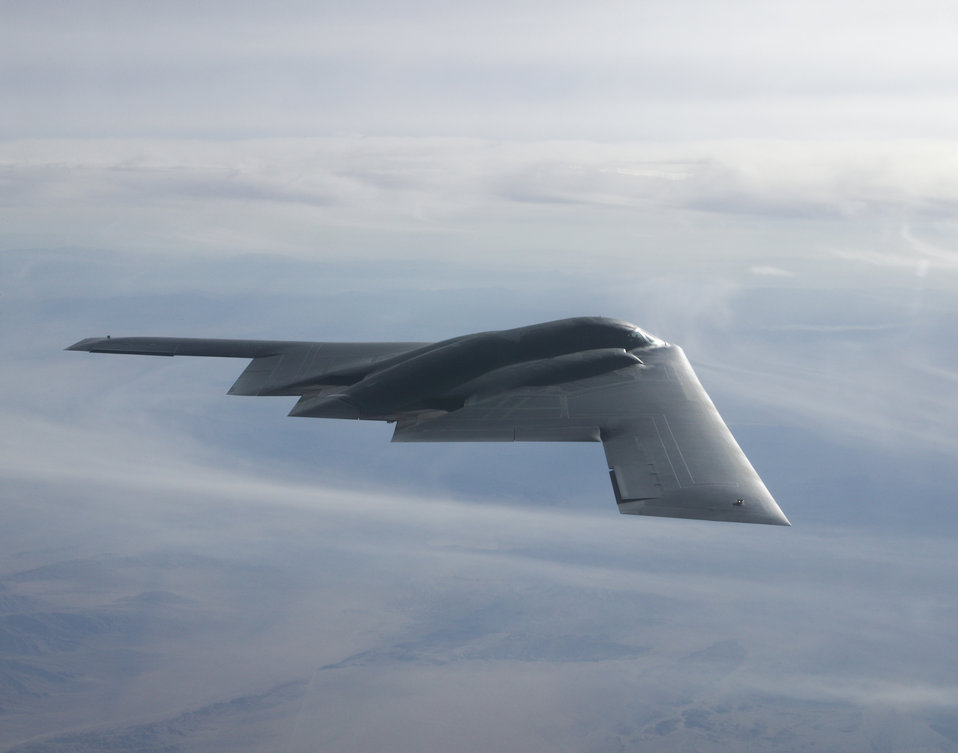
Air Force modernization takes B-2 to North Pole

A B-2 Spirit flies to the North Pole Oct. 27, 2011, on a test mission from Edwards Air Force Base, Calif. The polar flight helped ensure that the B-2 maintains its global combat power capability in all environments with new computers for future growth and sustained contributions to the greater Air Force mission.